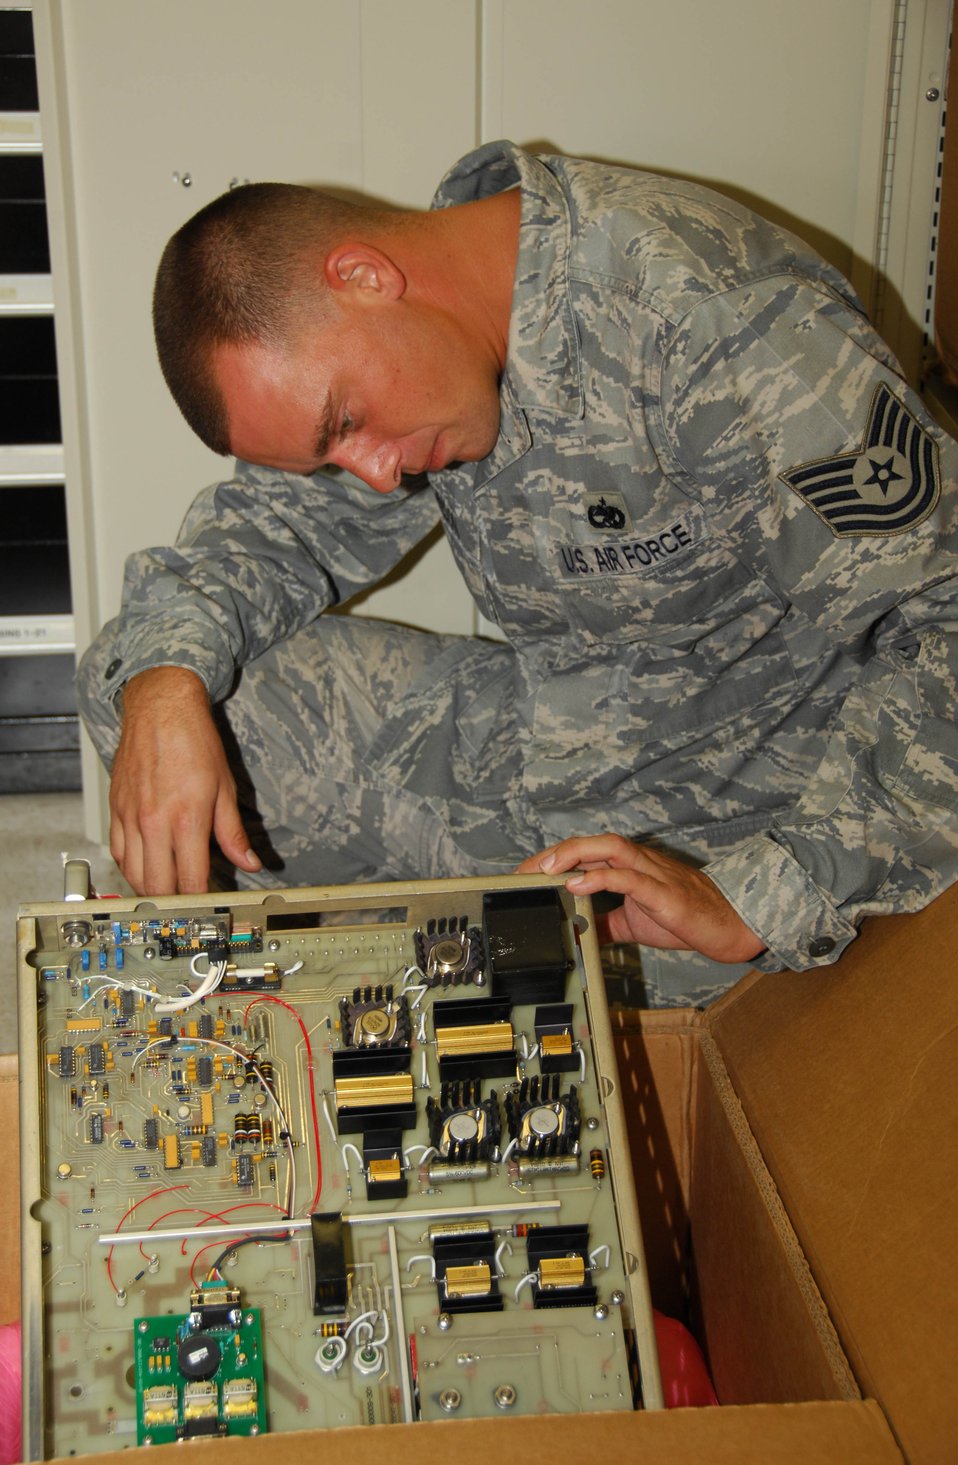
Shared weather radar ensures mission success

Tech. Sgt. Christopher Johnson checks the inventory number on a component for the Next Generation Weather Radar off-base Aug. 4 in Guam. The Communication Squadron provides maintenance support for the lone weather radar on island. Sergeant Johnson is the 36th Communications Squadron NCO in charge of ground radar systems.